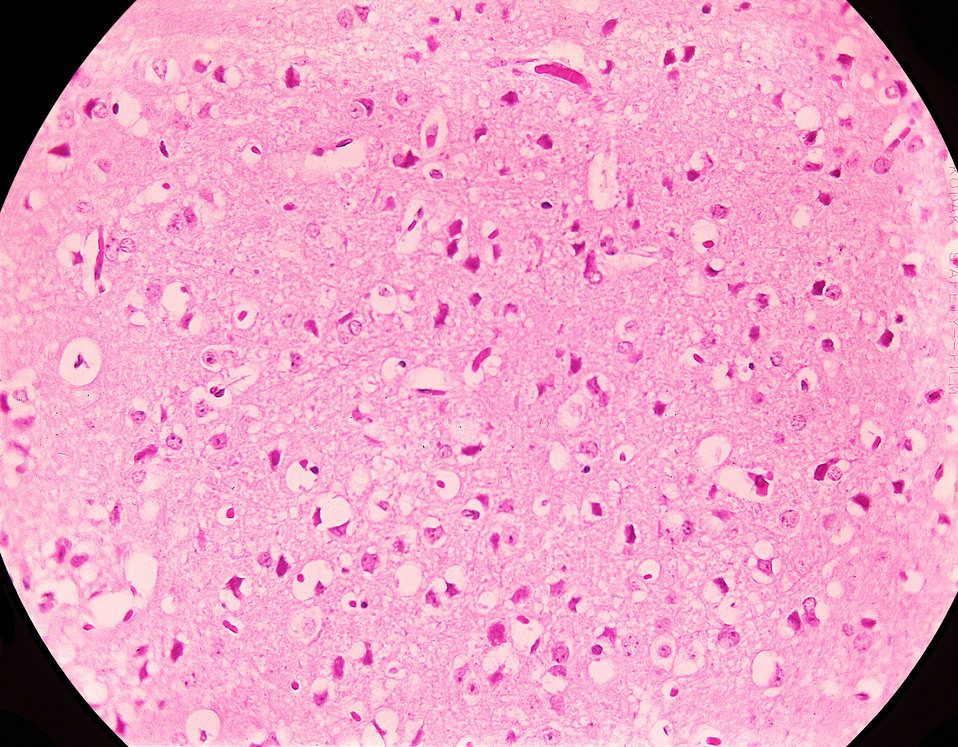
Magnified 300X, this photomicrograph of mouse brain tissue after dying of Venezuelan Encephalitis reveals neural necrosis and edema.